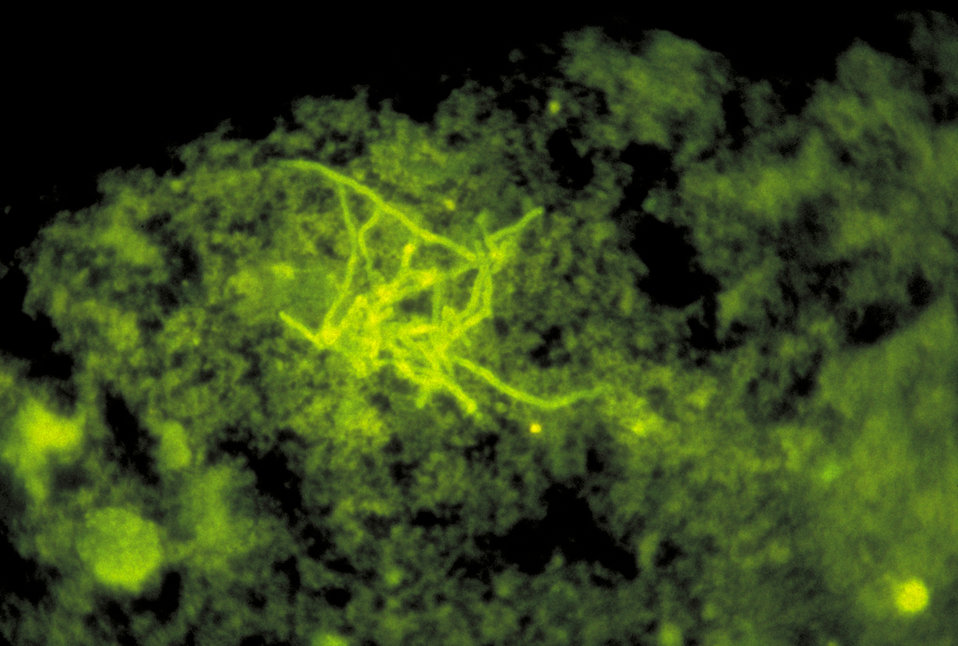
A photomicrograph of Actinomyces israelii removed from a brain abscess, using FA staining technique; Magnified 567X.